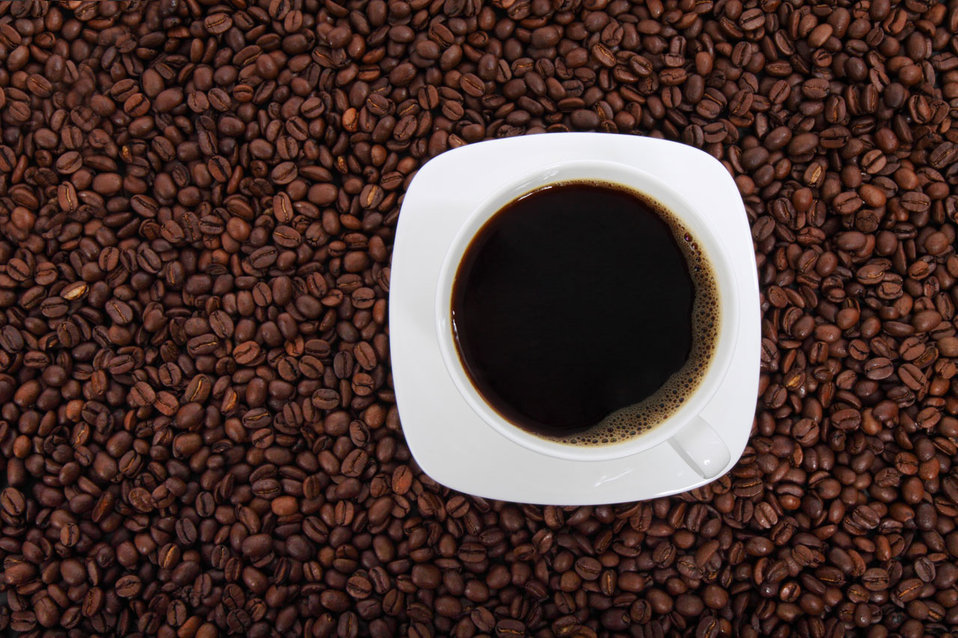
Cup of coffee from above

Cup of coffee surrounded with coffee beans from above.